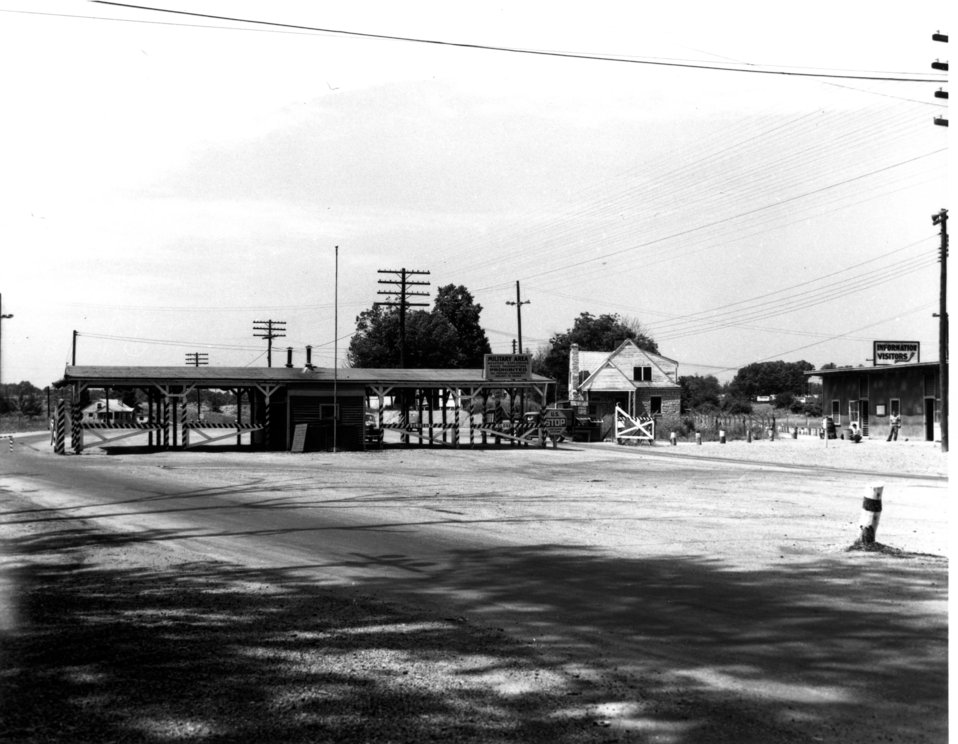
Security at Oak Ridge